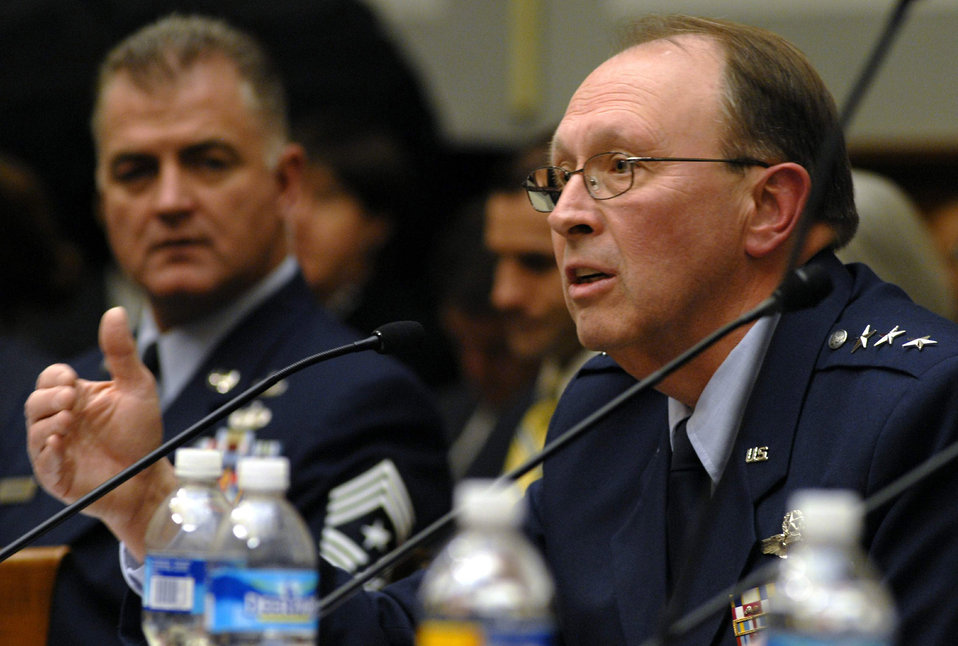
Air Force on target with recruiting, retention

Lt. Gen. Charles E. Stenner Jr., chief of the Air Force Reserve, testifies before the House Armed Services Committee Personnel Subcommittee March 2. The general was one of several senior military officials on Capitol Hill to answer questions about recruiting, retention and end strength for the active duty, Reserve and Air National Guard.